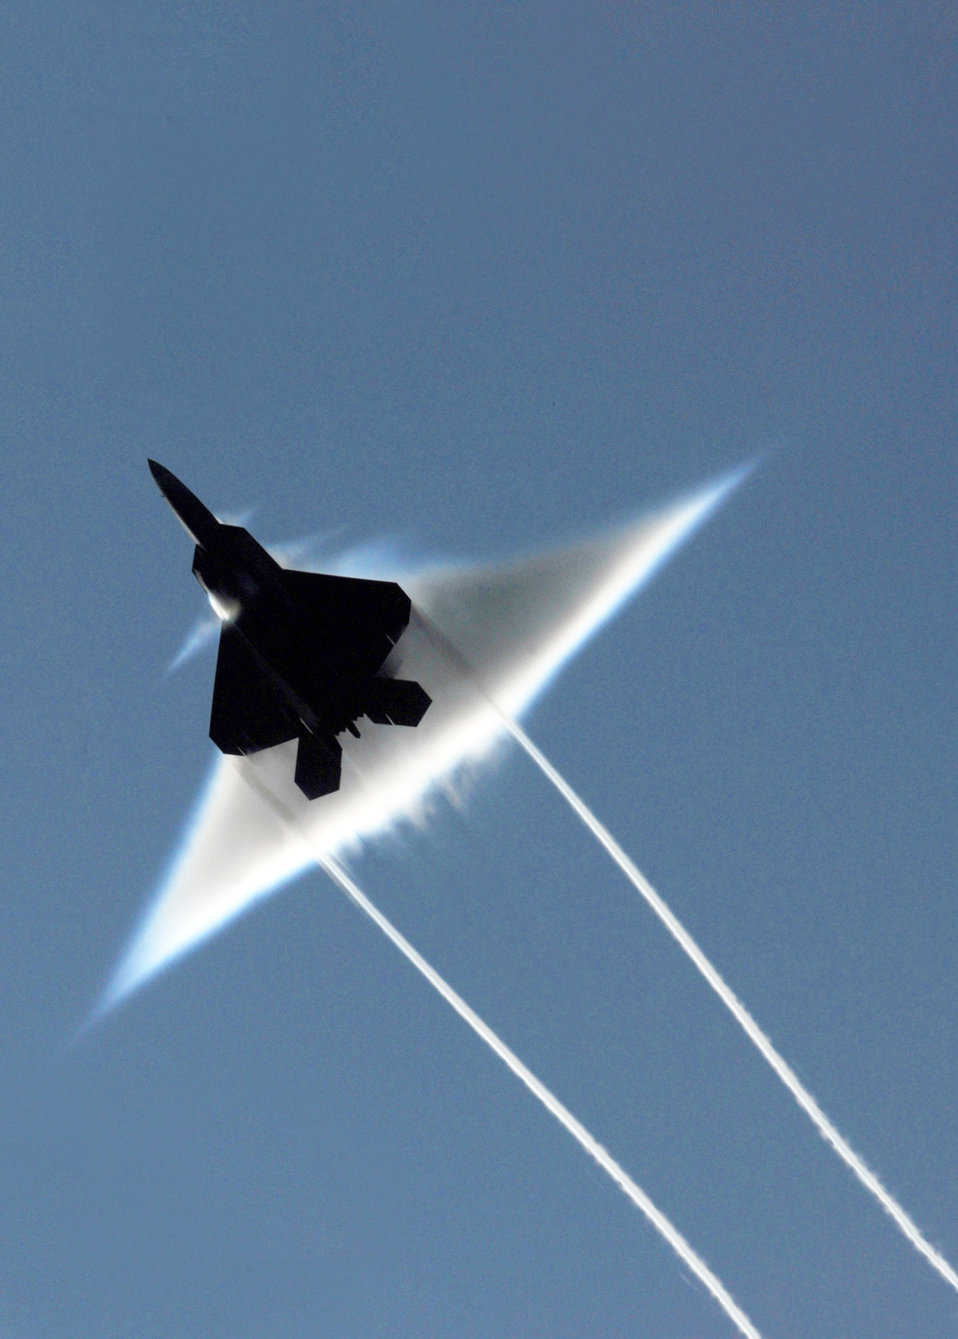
Going supersonic

An F-22 Raptor executes a supersonic flyby over the flight deck of the aircraft carrier USS John C. Stennis June 22, 2009, during Northern Edge 2009, a joint exercise in Alaska focusing on detecting and tracking units at sea, in the air and on land.